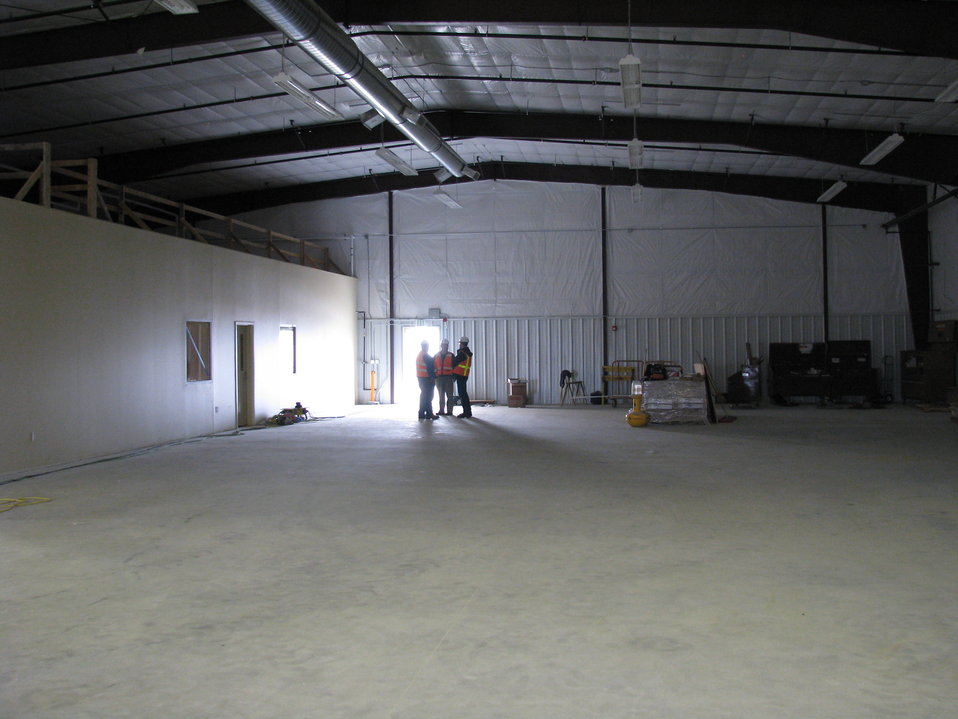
Recovery Act Strengthens Tank Farm Operations as Treatment Plant Takes Shape

Crews recently finished construction of a 10,000-square-foot climate-controlled storage facility at Hanford. The Recovery Act-funded facility supports the controlled storage needs for base operations, maintenance, and tank farm operations by providing a safer, more efficient distribution system.